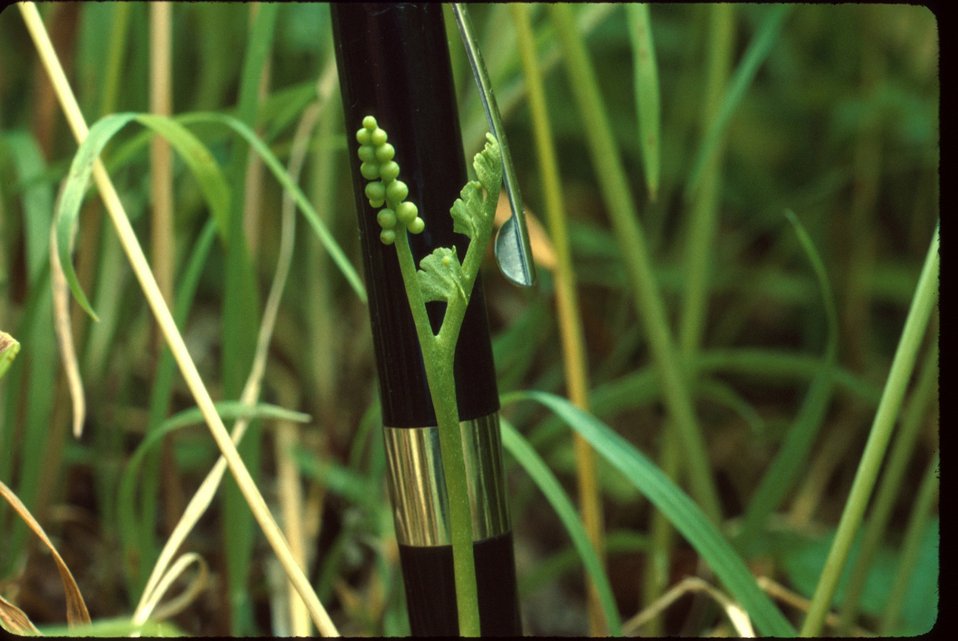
Bothyncium lunaria Moonwort Wildflower